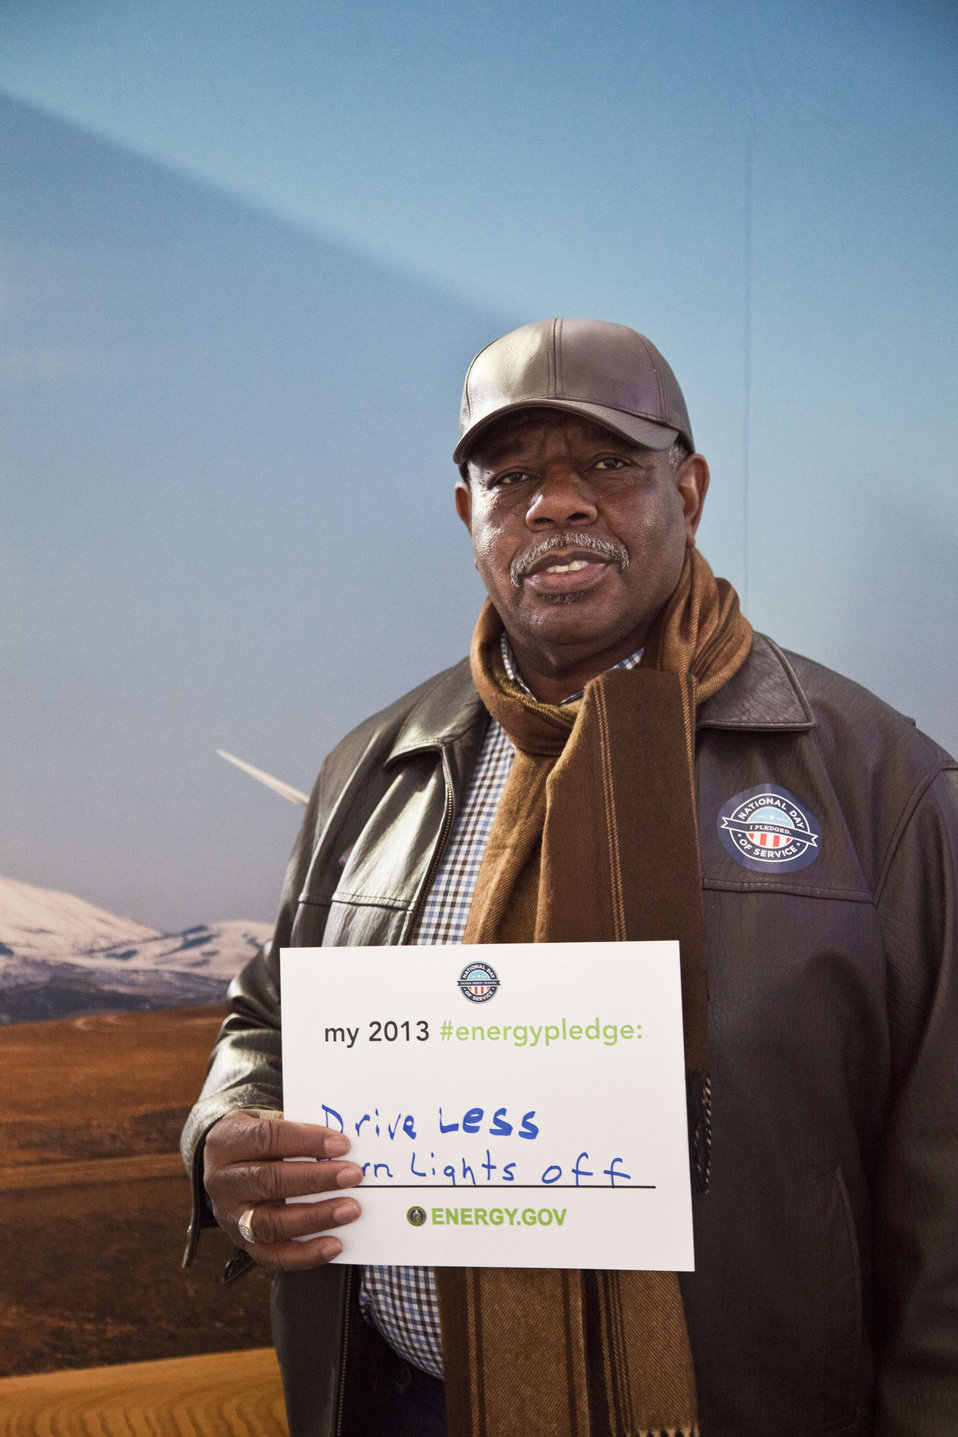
What's your #energypledge?